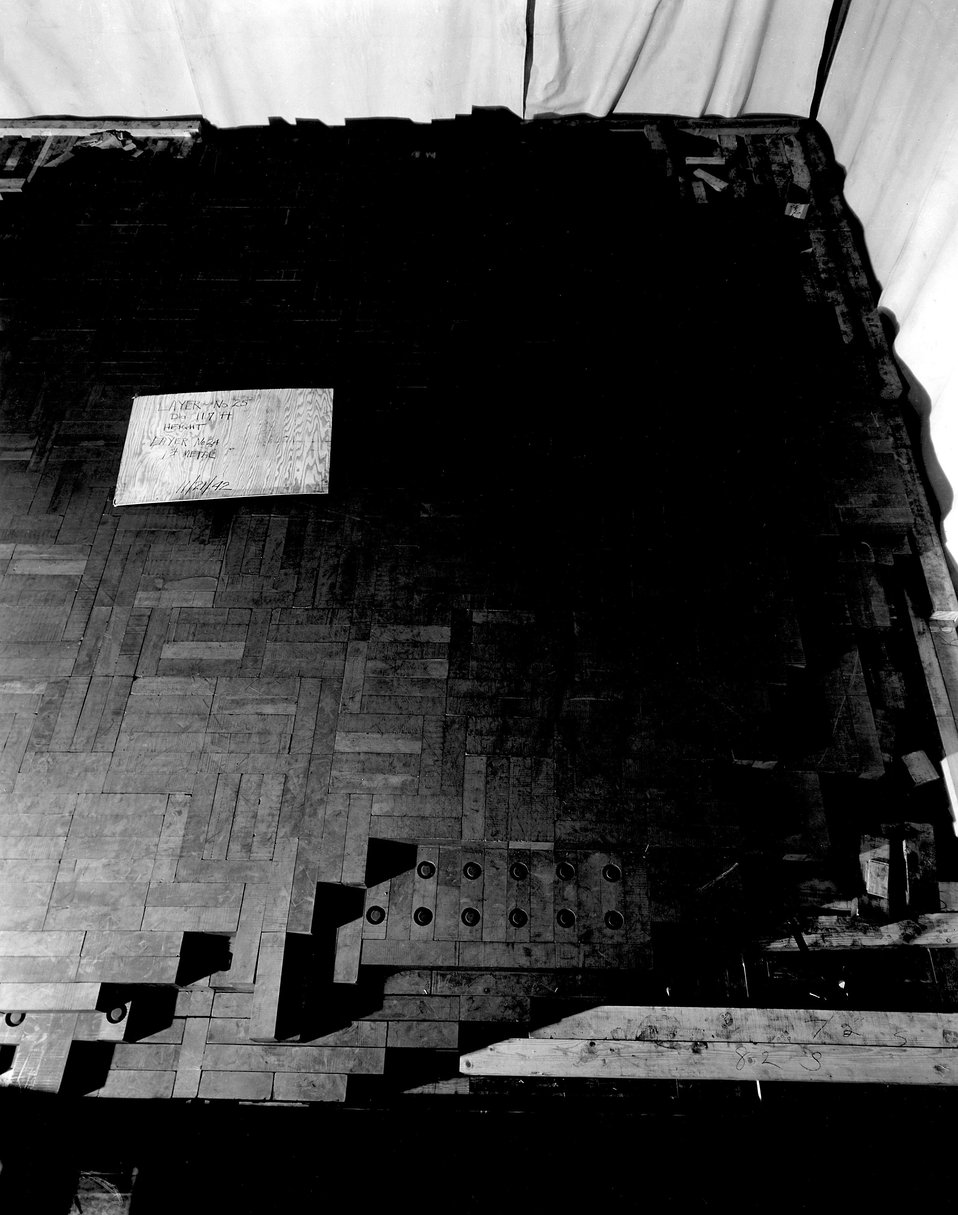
The world's first reactor during assembly. This photo was taken November 21, 1942..